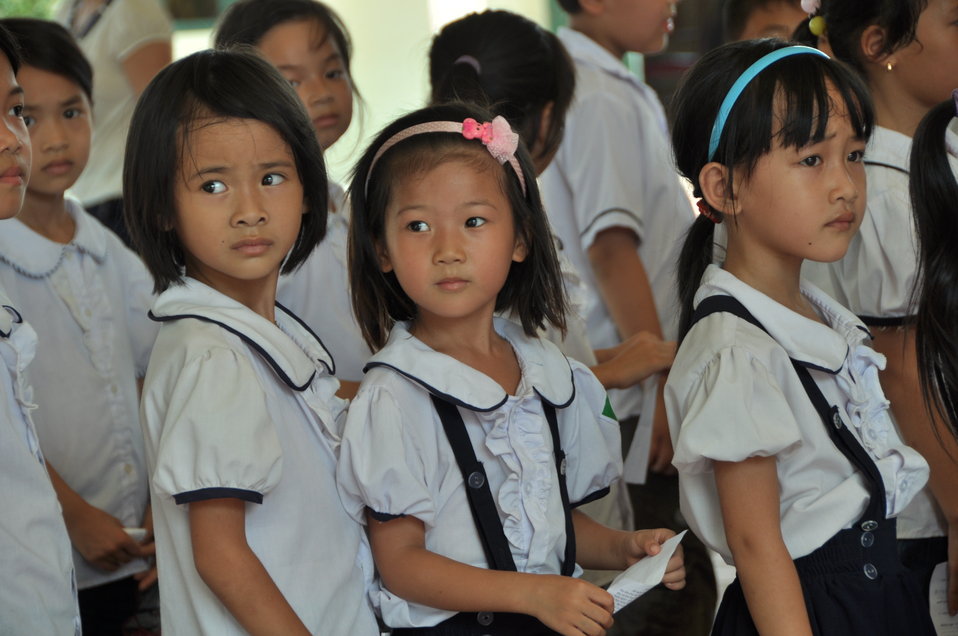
USAID supports deworming education and medication distribution in Bac Giang Province

May 20, 2013